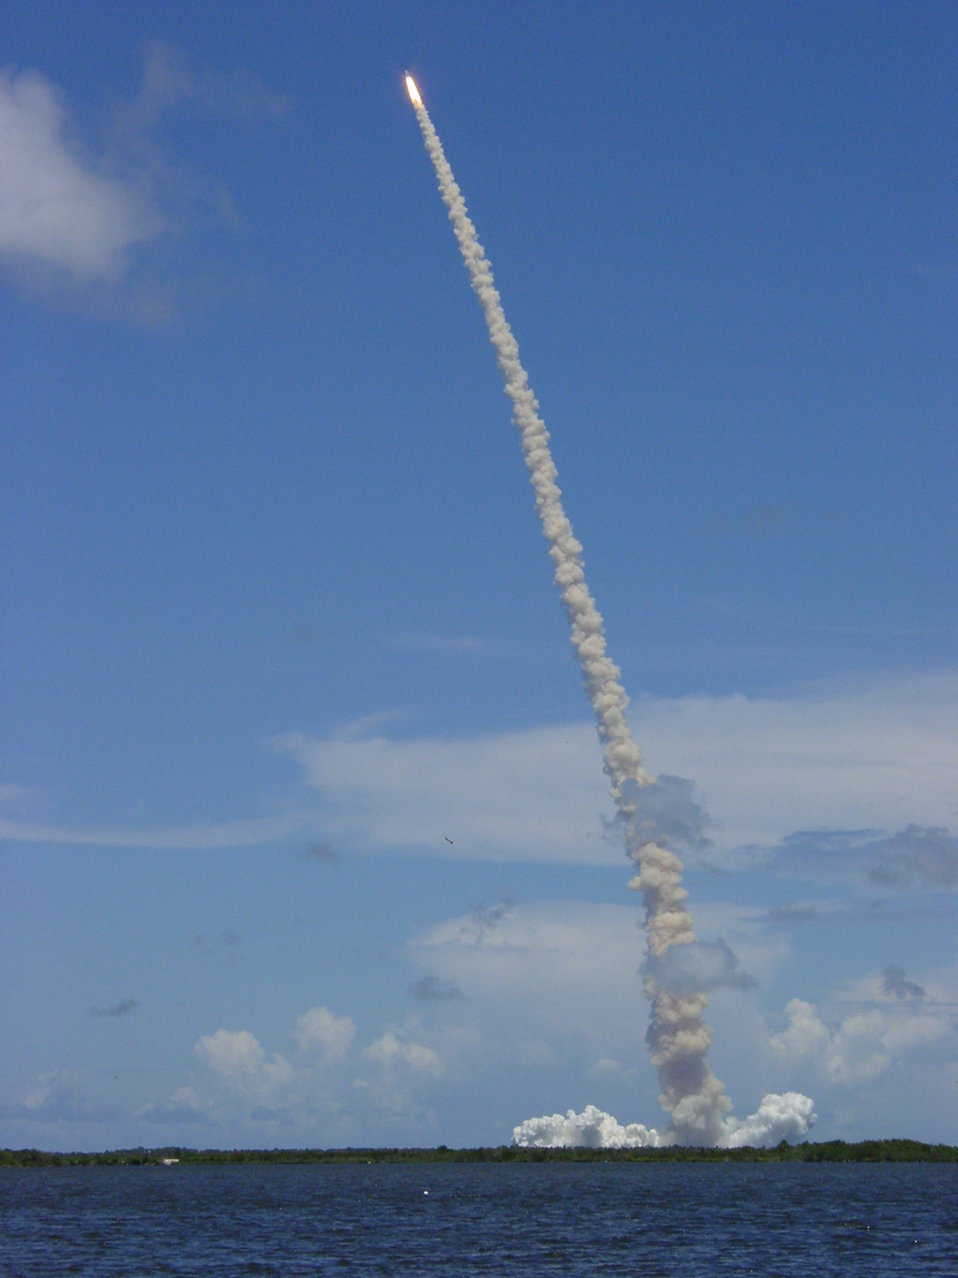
The space shuttle Discovery and its seven-member crew roar into space on July 4, 2006